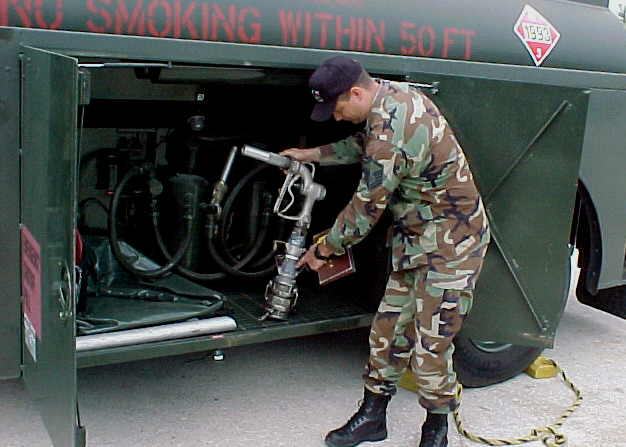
Saving the day

ELLINGTON FIELD, Texas -- Master Sgt. Lynn Bailey adjusts a custom-built fuel truck nozzle here. He and Staff Sgt. Vic Taylor created the nozzle after two Texas Army National Guard fuel trucks were unable to refuel evacuation support buses in Beaumont, Texas, Sept. 23. Those fuel nozzles were not compatible with the buses. Sergeants Bailey and Taylor are with the 147th Fighter Wing fuels shop.